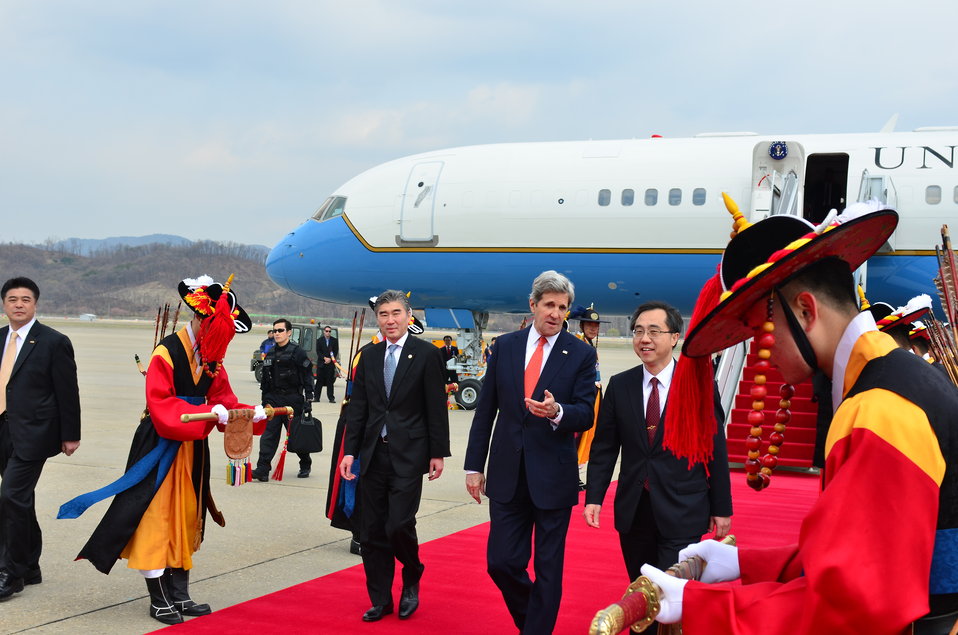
Secretary Kerry Arrives in South Korea

U.S. Secretary of State John Kerry is escorted by Moon Seoung-hyun, Deputy Director General of the Ministry of Foreign Affairs for North America, and accompanied by U.S. Ambassador to South Korea Sung Kim upon his arrival in Seoul, South Korea, on April 12, 2013.